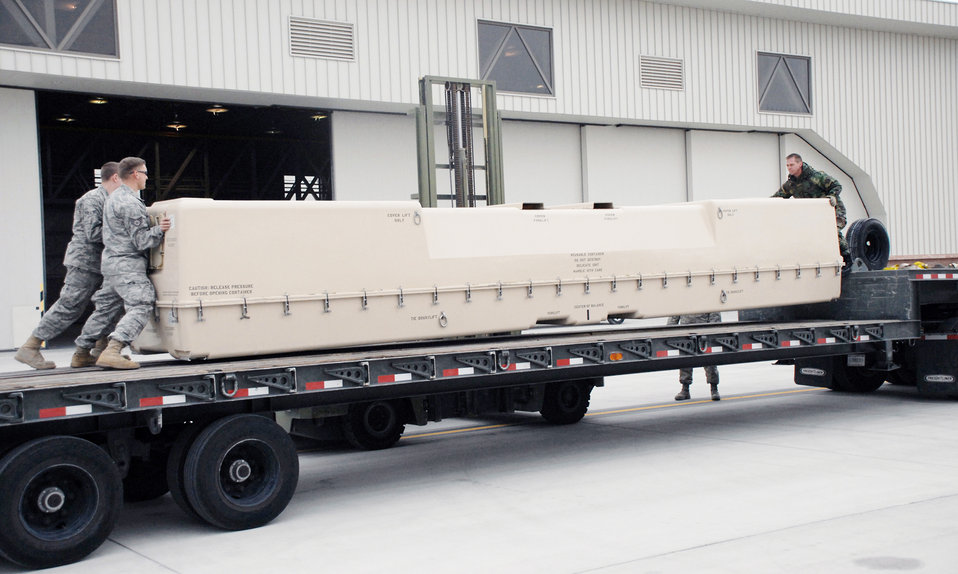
ISR support for Haiti relief

Airmen with the 432nd Aircraft Maintenance Squadron at Creech Air Force Base, Nev., prepare an RQ-1 Predator for deployment in support of Operation Unified Response, Jan. 20. The Predator is a medium-altitude, long-endurance, remotely piloted aircraft.